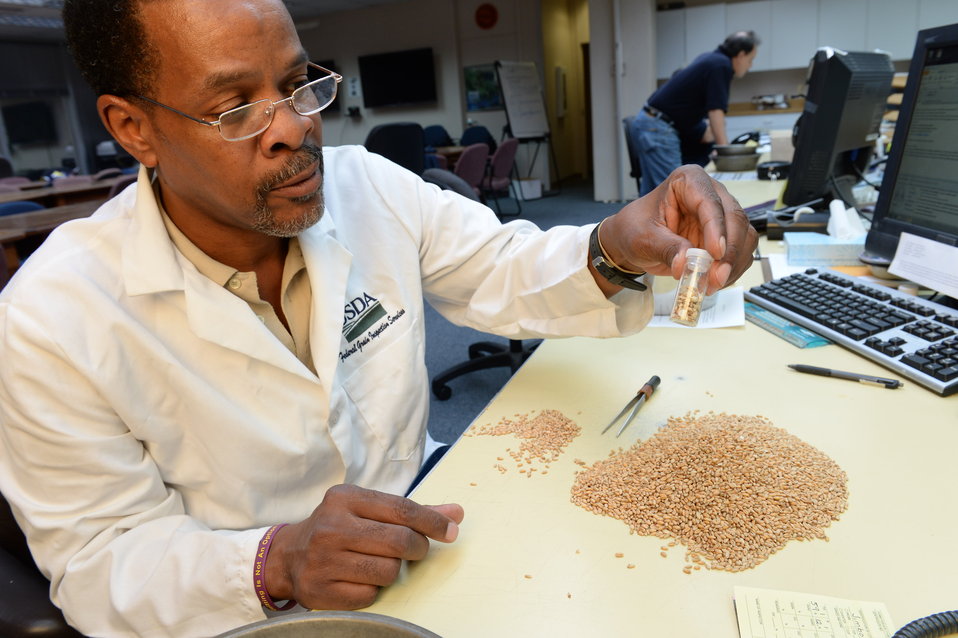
A U.S. Department of Agriculture (USDA) Grain Inspection, Packers and Stockyards Administration (GIPSA) Federal Grain Inspection Service (FGIS) scientist tests wheat at the FGIS inspection laboratory in New Orleans, LA on Monday, Nov. 18, 2013.